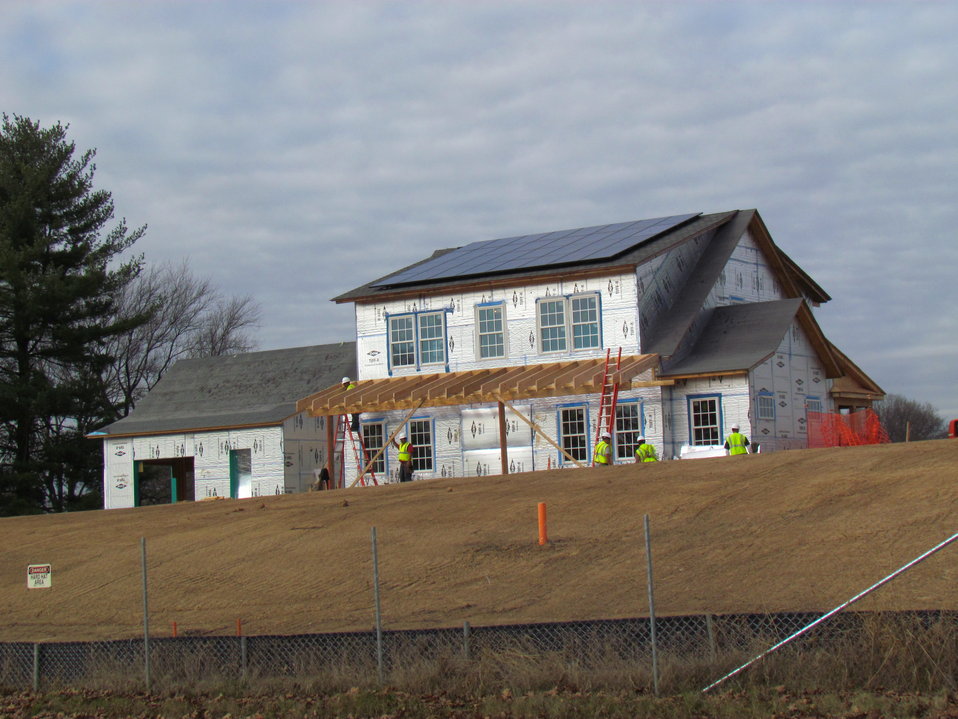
Net-Zero Energy Residential Test Facility – Construction photo showing progress on construction of front porch with rafters in place.